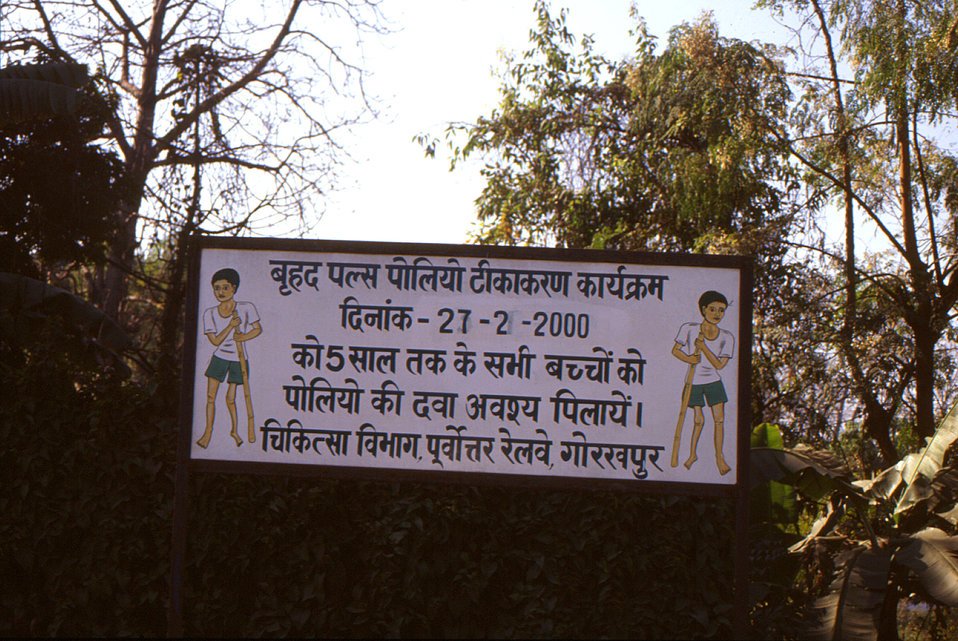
This 2000 photograph depicted a sign displayed in Gorakhpur, India, which advertised a Pulse Polio Vaccination Program that had been scheduled to take place on February 27, 2000, the main purpose of which was to vaccinate children up to 5 years of age against polio. This image was provided by Chris Zahniser, B.S.N., R.N., M.P.H., a STOP Transmission of Polio (STOP) immunization initiative team member and photographer. Ms. Zahniser was at the time assigned to the state of Uttar Pradesh in northern India, and spent three months working in the Districts of Gorakhpur and Deoria.